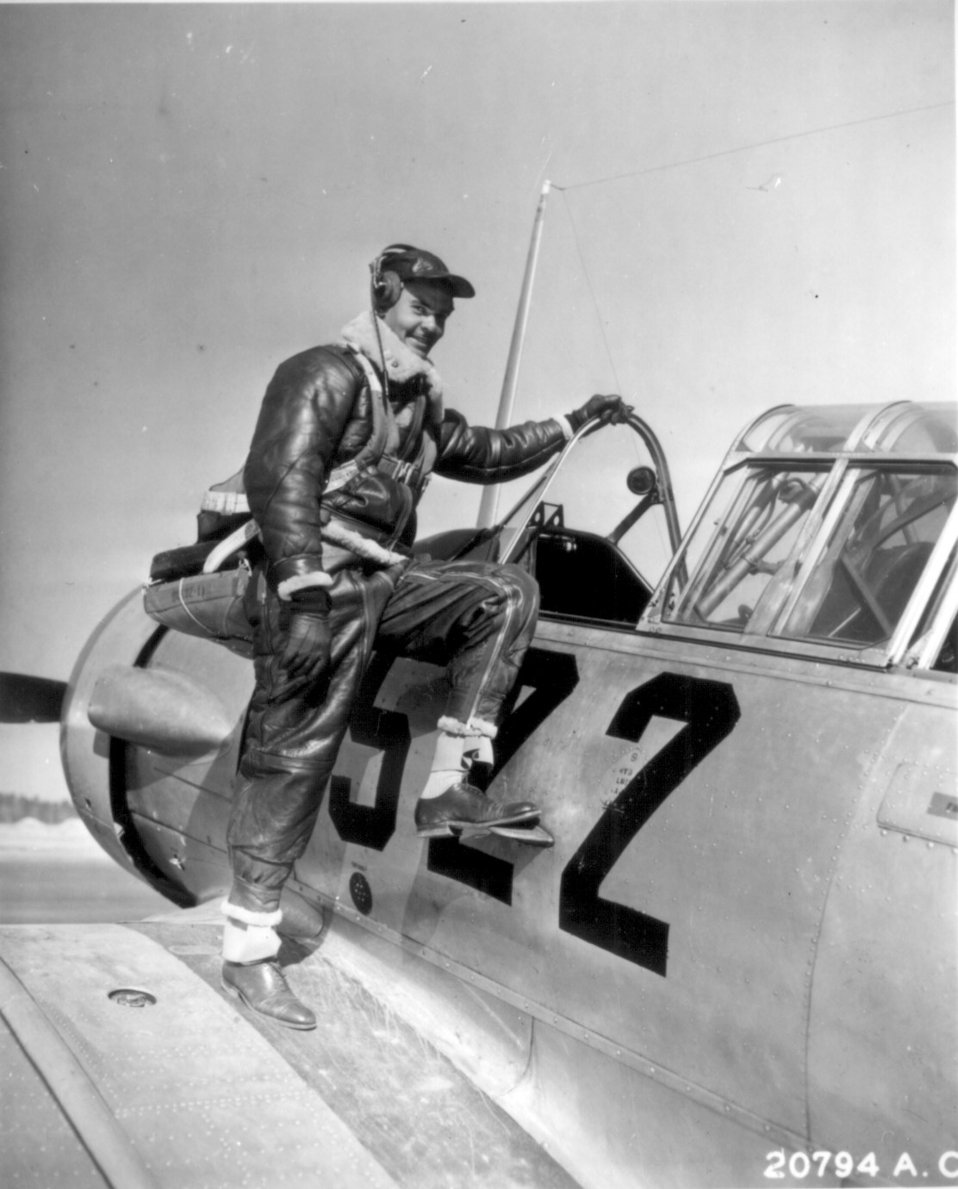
Benjamin O. Davis Jr.: One of the first Tuskegee Airmen went on to become first African-American general in U.S. Air Force.